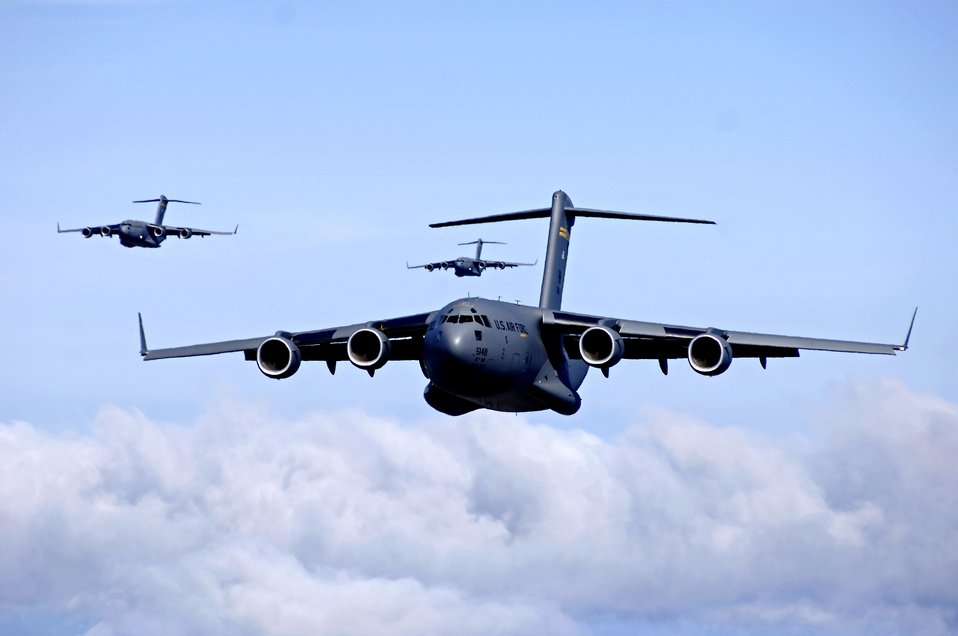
Dover reorganizes for C-17 mission

C-17 Globemaster IIIs fly in an airdrop training mission. Dover Air Force Base in Delware is preparing to receive the first of 13 C-17 Globemaster IIIs scheduled to arrive this summer.